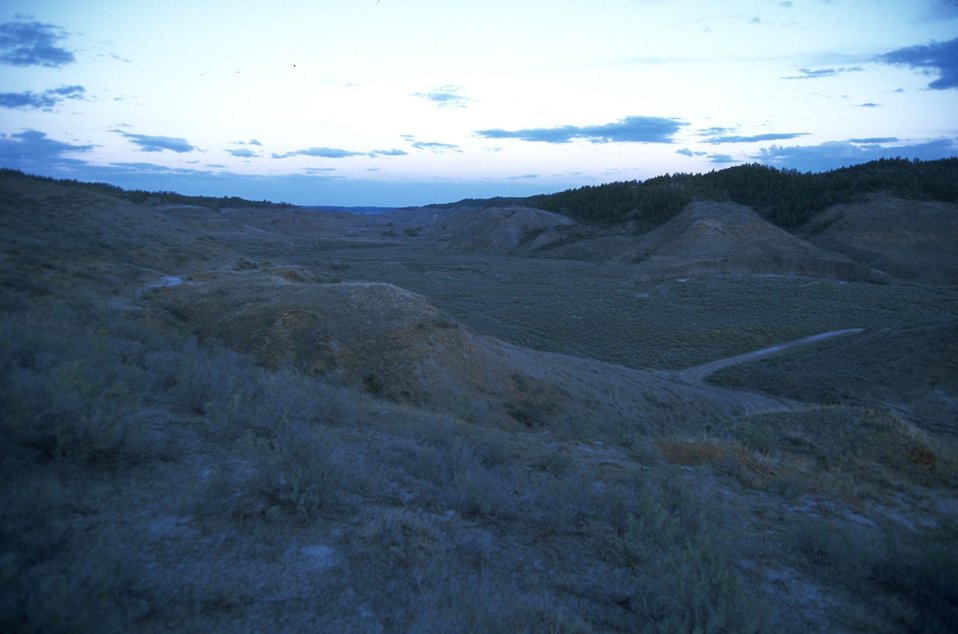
Missouri Breaks Scenery